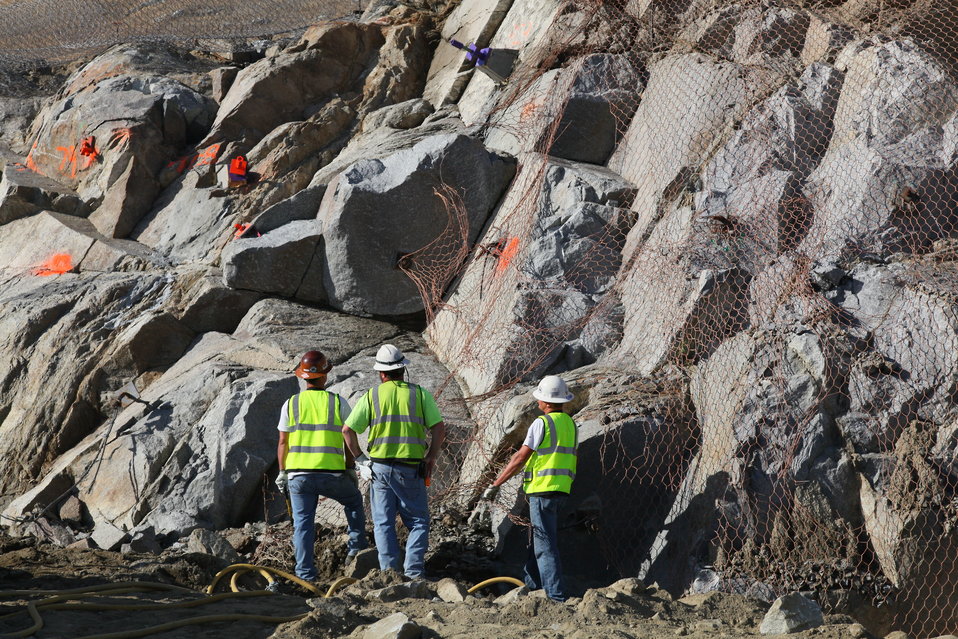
Excavating Folsom Dam’s auxiliary spillway

Excavation of the auxiliary spillway at Folsom Dam in Folsom, Calif., continues June 16, 2011. The spillway will let Folsom Dam release water sooner and more safely. The project is part of the Folsom Dam Joint Federal Project, a joint effort of the U.S. Army Corps of Engineers Sacramento District, the U.S. Bureau of Reclamation, the Central Valley Flood Protection Board and the Sacramento Area Flood Control Agency to improve the safety of the dam and reduce flood risk for the greater Sacramento area.